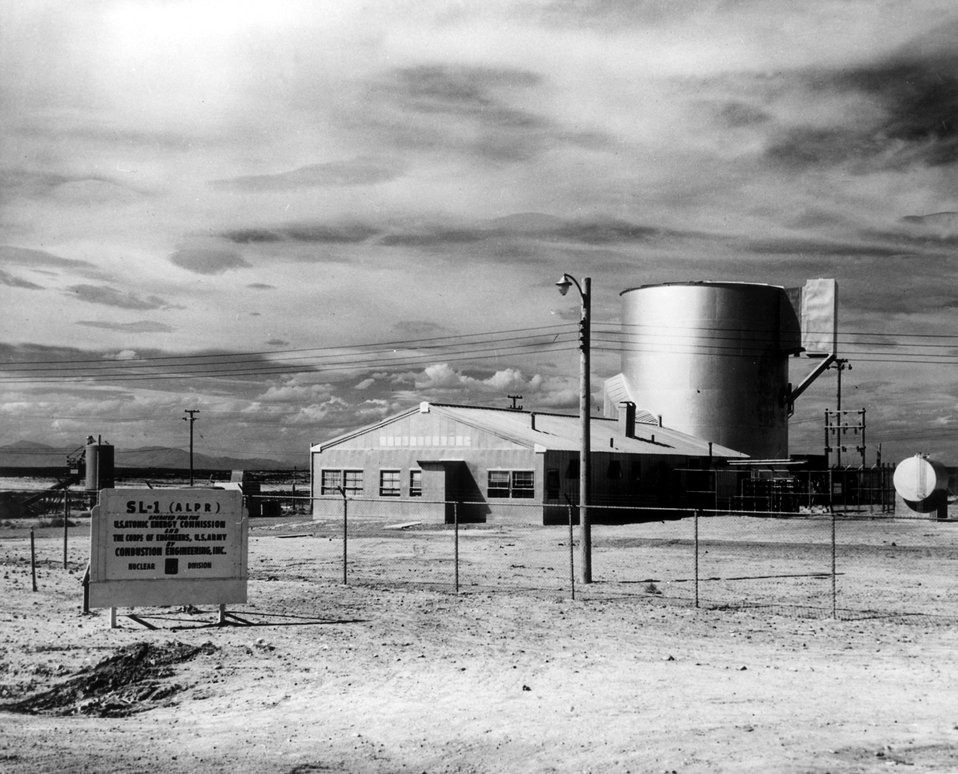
View showing SL-1 looking North showing Reactor Building and tank with sign in foreground. Circa 1960.